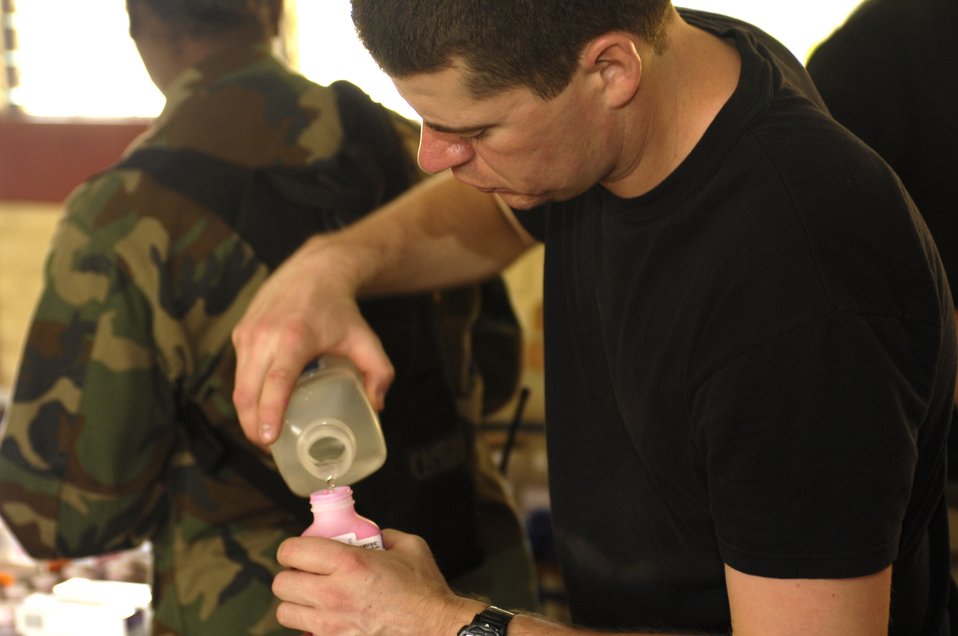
Airmen complete Nicaraguan medical exercise

An Airman mixes medicines while participating in Medical Readiness Training Exercises for the people in Santa Teresa Feb. 26 during New Horizons - Nicaragua 2007. The $7.25 million joint U.S. and Nicaraguan military humanitarian and training exercise, provides a new school and medical clinic, as well as free health and veterinary care, giving aid and strengthening bonds between the two nations. The Airman is from the 9th Medical Group at Beale Air Force Base, Calif.